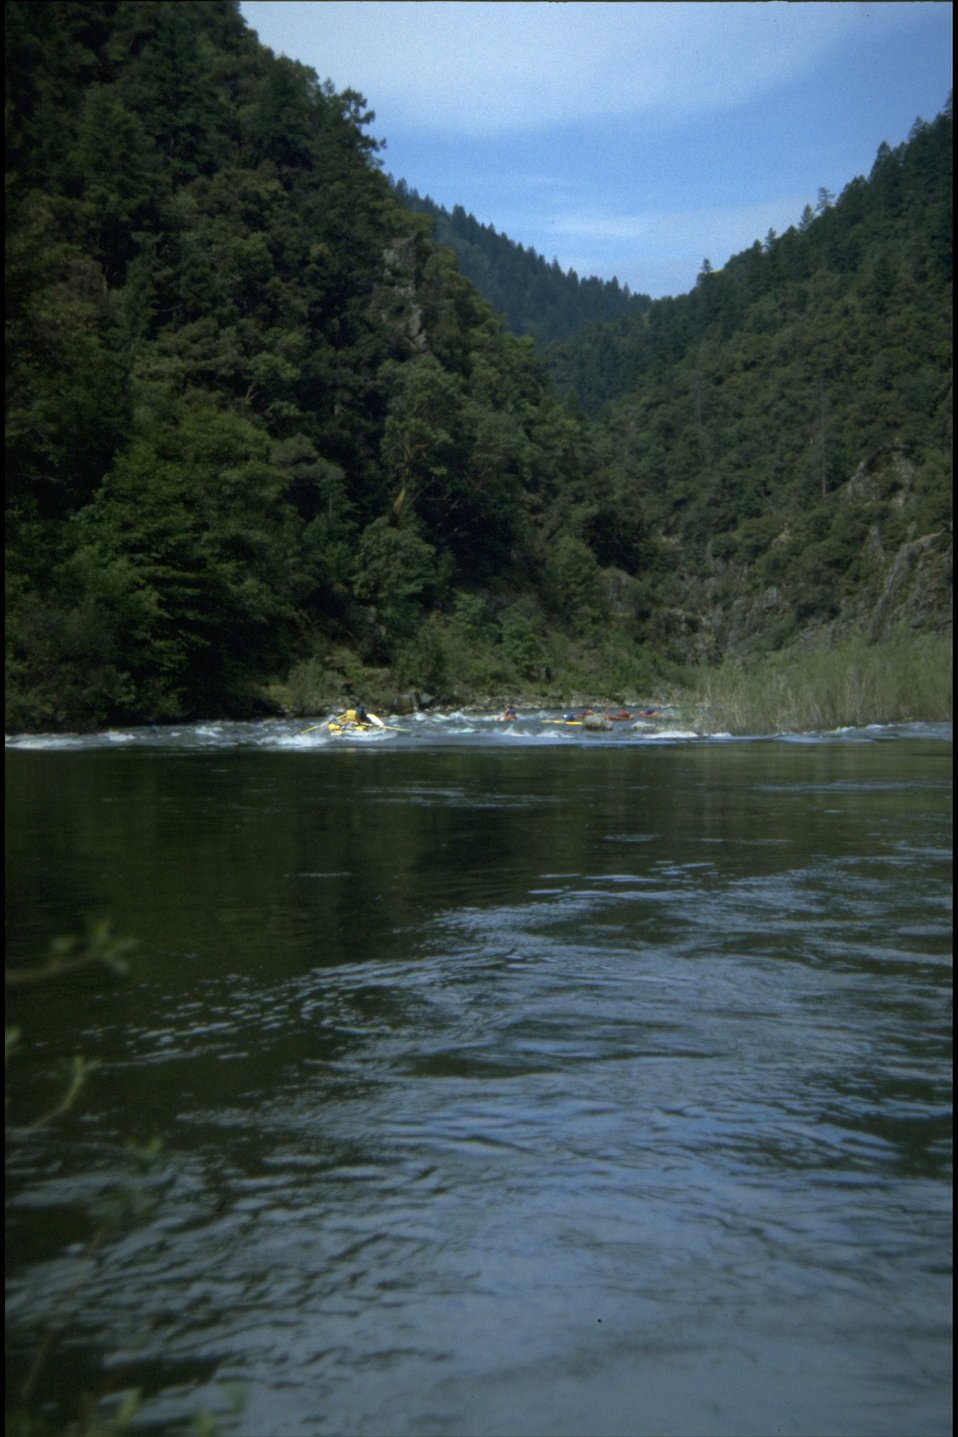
Floaters starting Grave Creek Rapids.